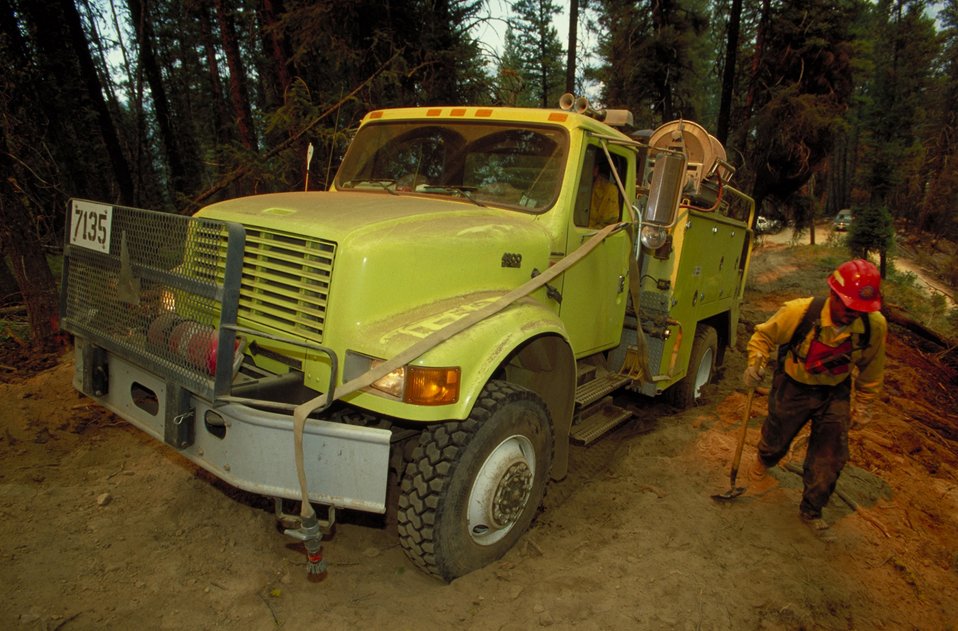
Heavy engine and fire fighter Fire Season 2000 Lower Snake River District LSRD